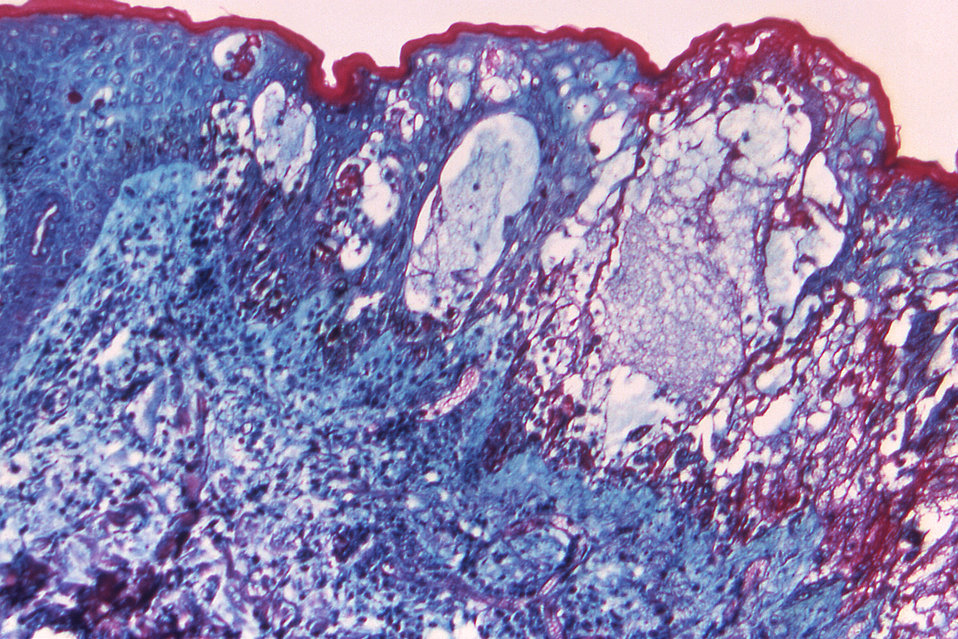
Under a magnification of 125X, this photomicrograph reveals some of the cytoarchitectural histopathologic changes which you'd find in a human skin tissue specimen that included a chickenpox, or varicella zoster virus lesion.